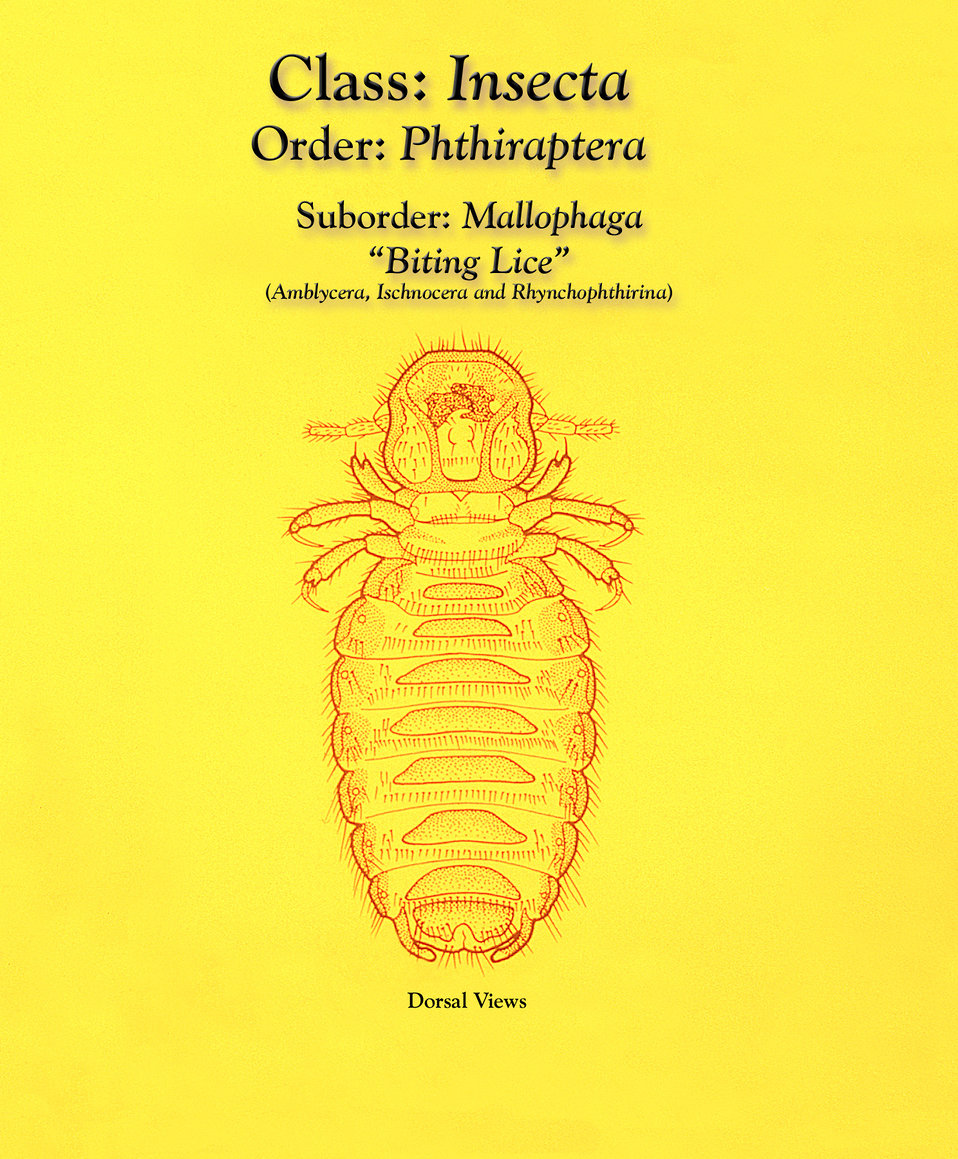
This illustration depicts the morphologic characteristics found to be displayed by a representative of the taxonomic suborder Mallophaga, or 'biting lice', with its well developed mandibles for biting and chewing.